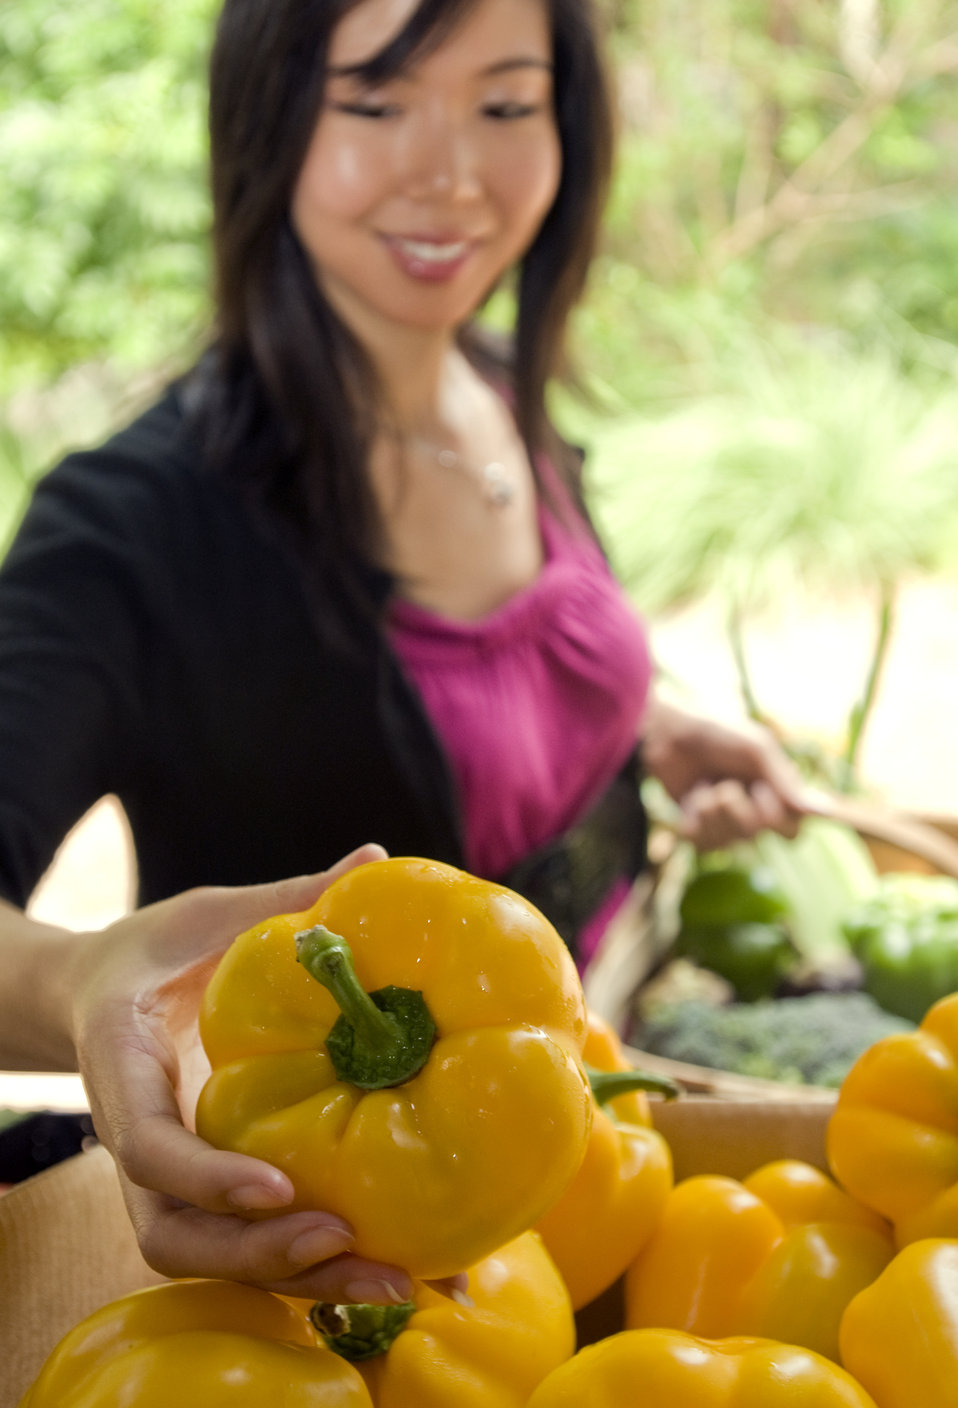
This woman was photographed as she was shopping for groceries at a mobile Georgian farmers market at a point in her activity where she was picking out a bright yellow, ripe bell pepper from a cardboard container in the market's produce section. Here she appears to have made her choice, holding her pick in her right hand before adding it to a woven wooden basket.